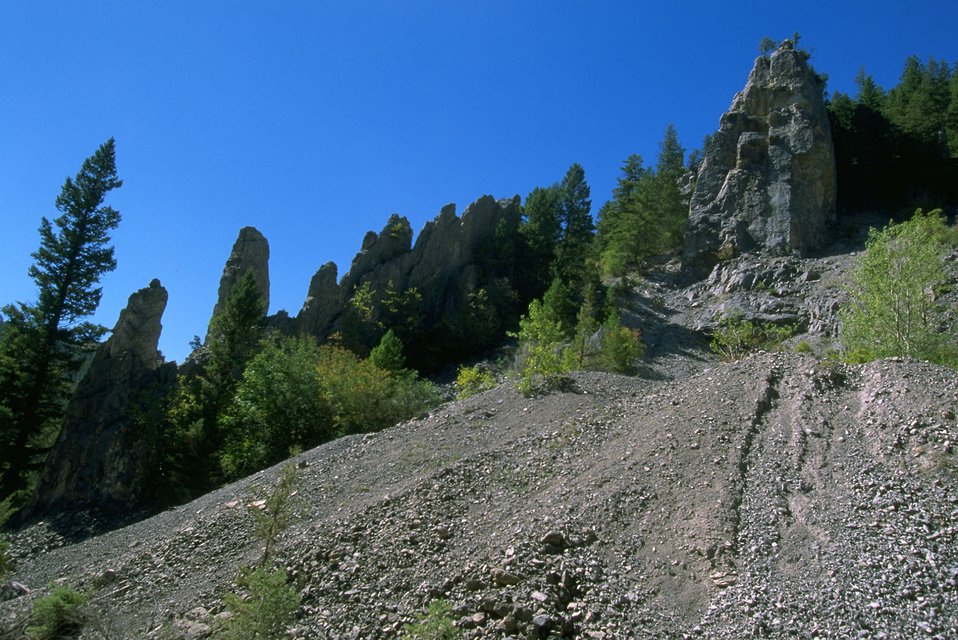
Rattler Gulch-Limestone Cliffs ACEC